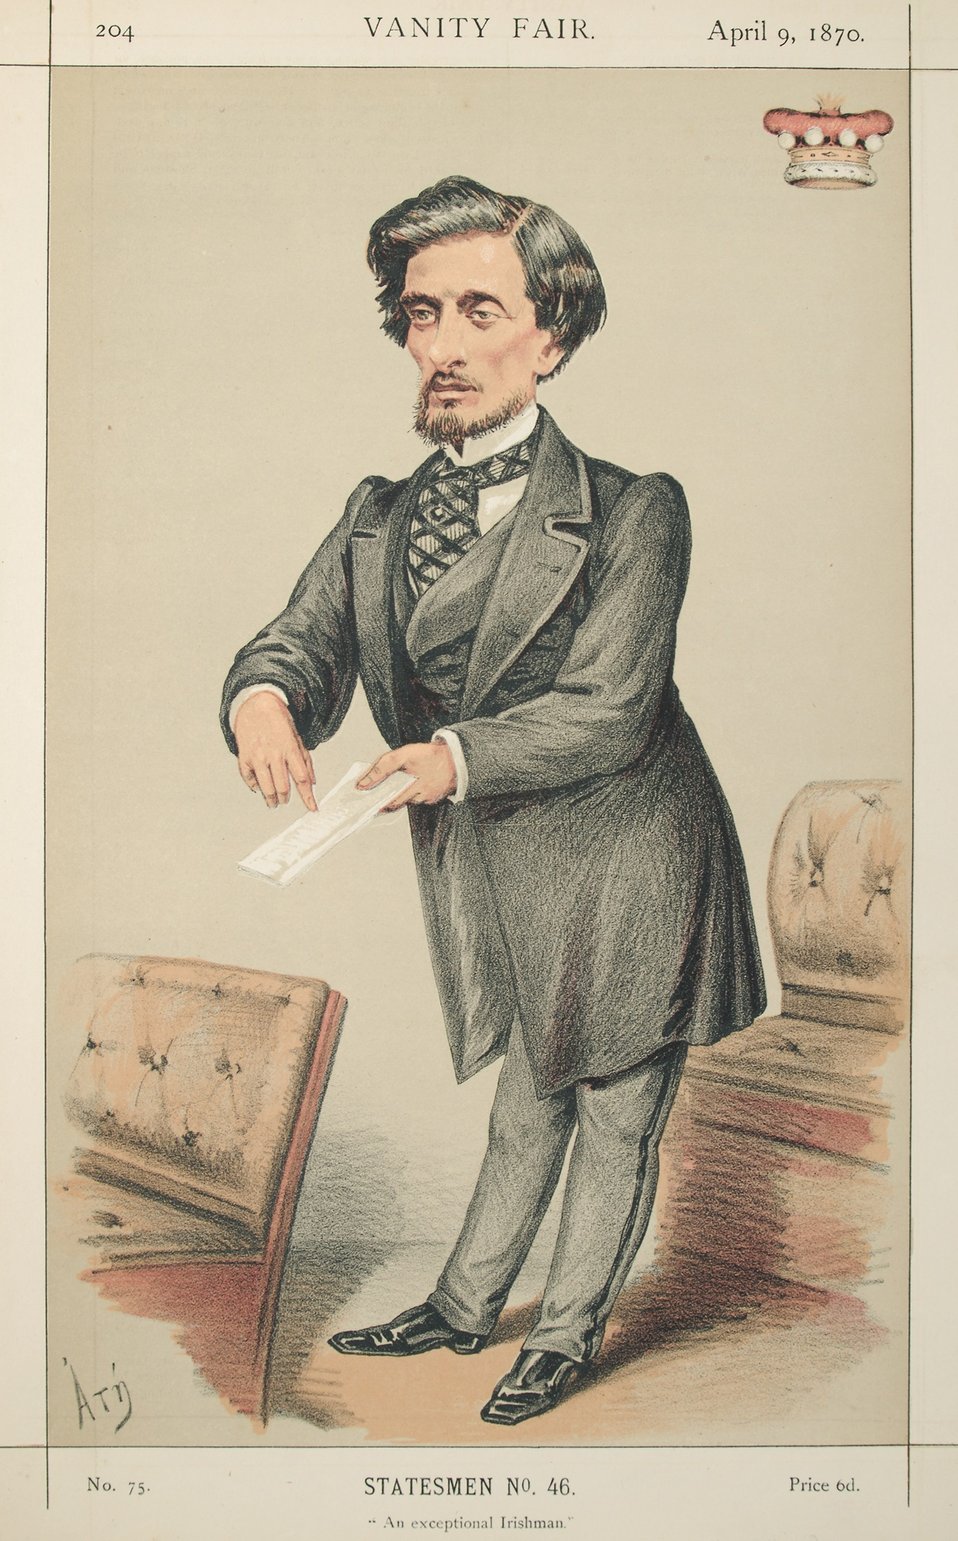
Statesmen No.46: Caricature of Lord Dufferin.
Caption reads: 'An exceptional Irishman.'